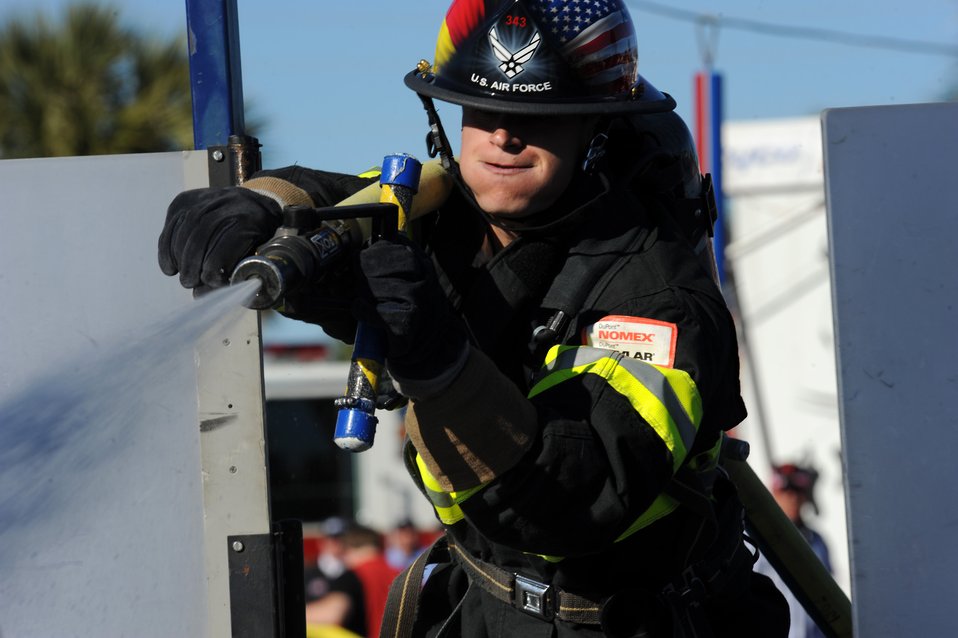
Air Force firefighters showcase skills in world competition

Senior Airman Robert Anderson competes in the relay competition Nov. 13, 2010, at the 2010 Scott Firefighter Combat Challenge in Myrtle Beach, S.C. Airman Anderson is assigned to the 52nd Civil Engineer Squadron at Spangdahlem Air Base, Germany.